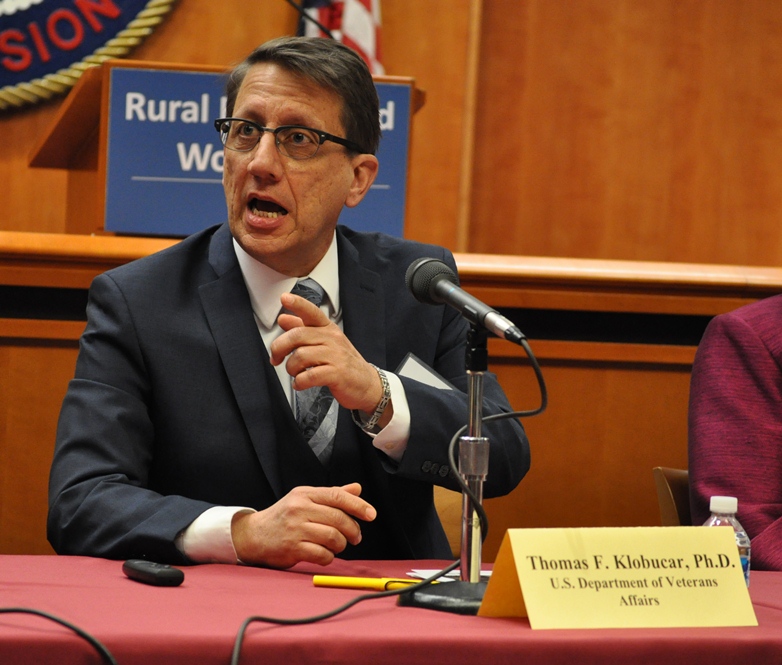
Rural Broadband Workshop: March 19, 2014

Panel 1: Broadband Needs, Challenges and Opportunities in Rural America